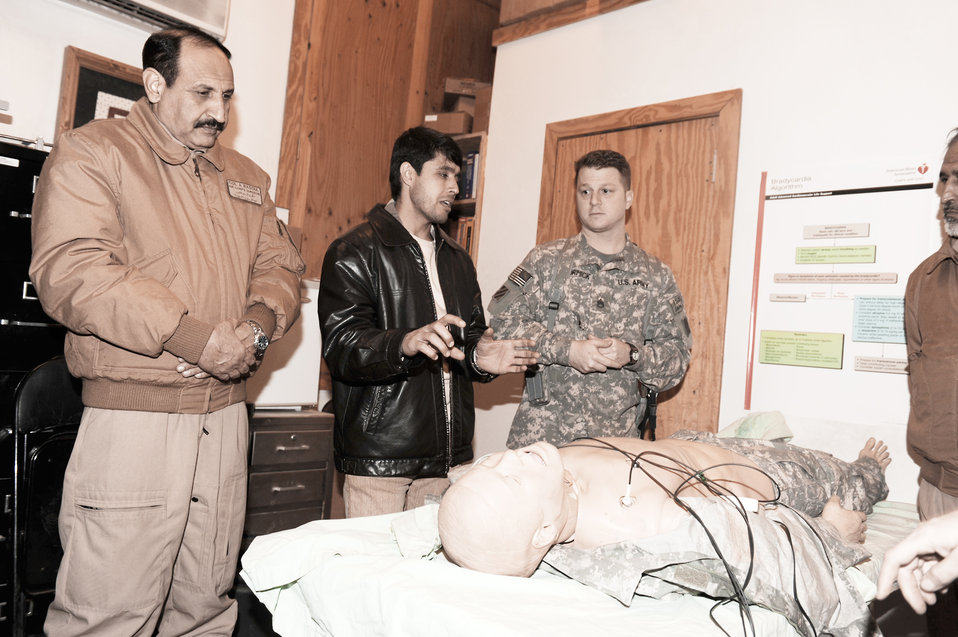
ANAAC Conference

Army Staff Sgt. Joseph McCormick shows Col. Abdul Rasoul (left), Afghan National Army Air Corps surgeon general, and other members of the ANAAC how U.S. forces train for medical emergencies. The ANAAC members were at Bagram Airfield March 6, 2010, to discuss the evolution of the medical evacuation mission in Afghanistan.